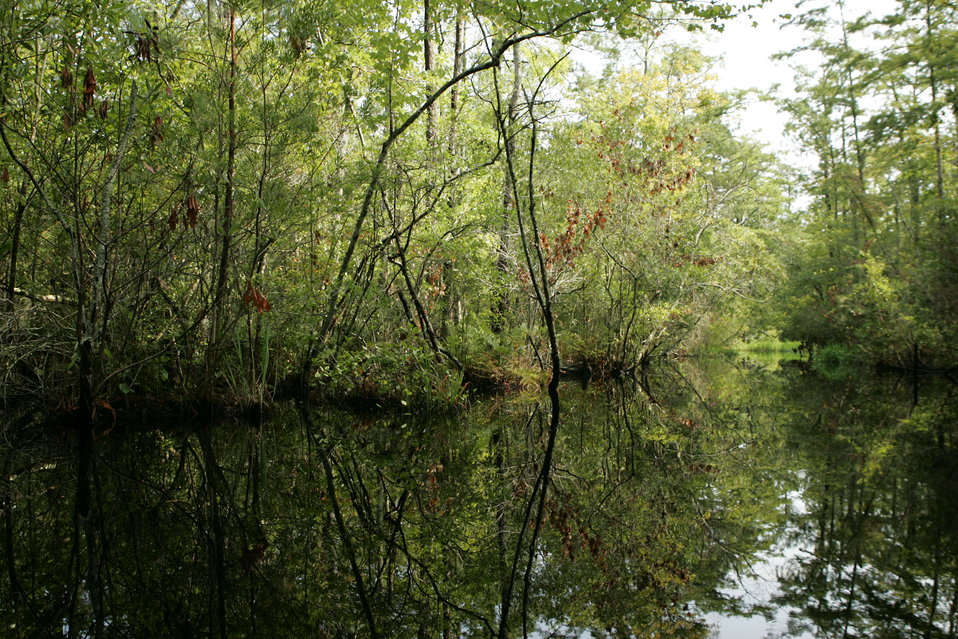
A mirror reflection.

The trees and plants that line the banks provide shade and comfort for the soul.